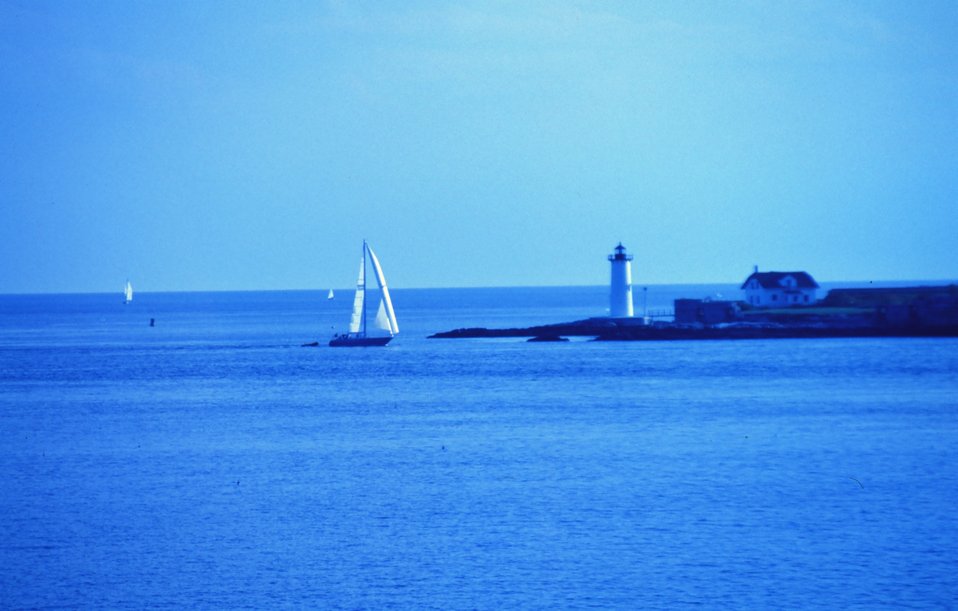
Portsmouth Harbor Lighthouse